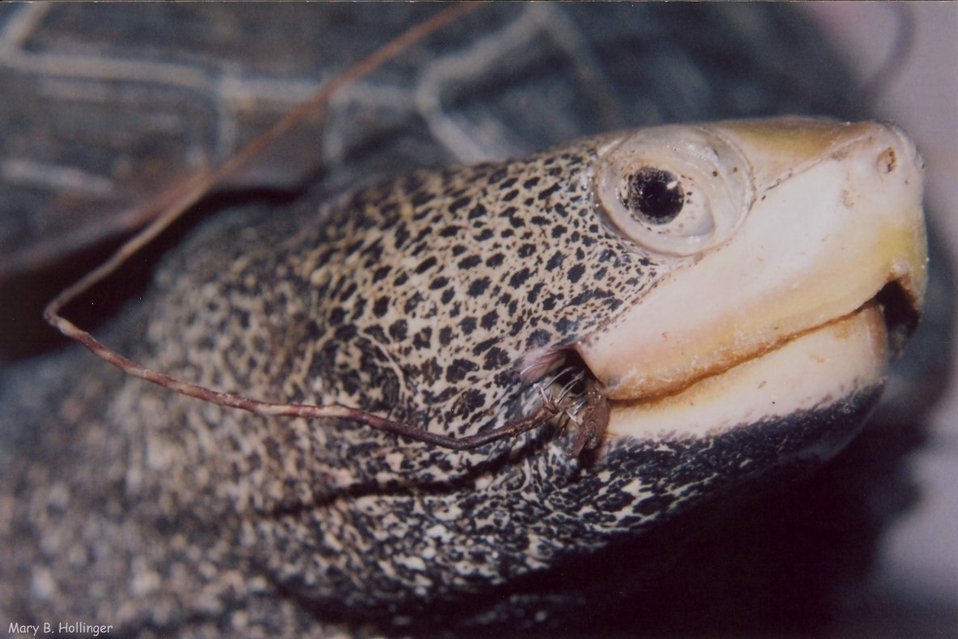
Terrapin with fish hook lodged in mouth